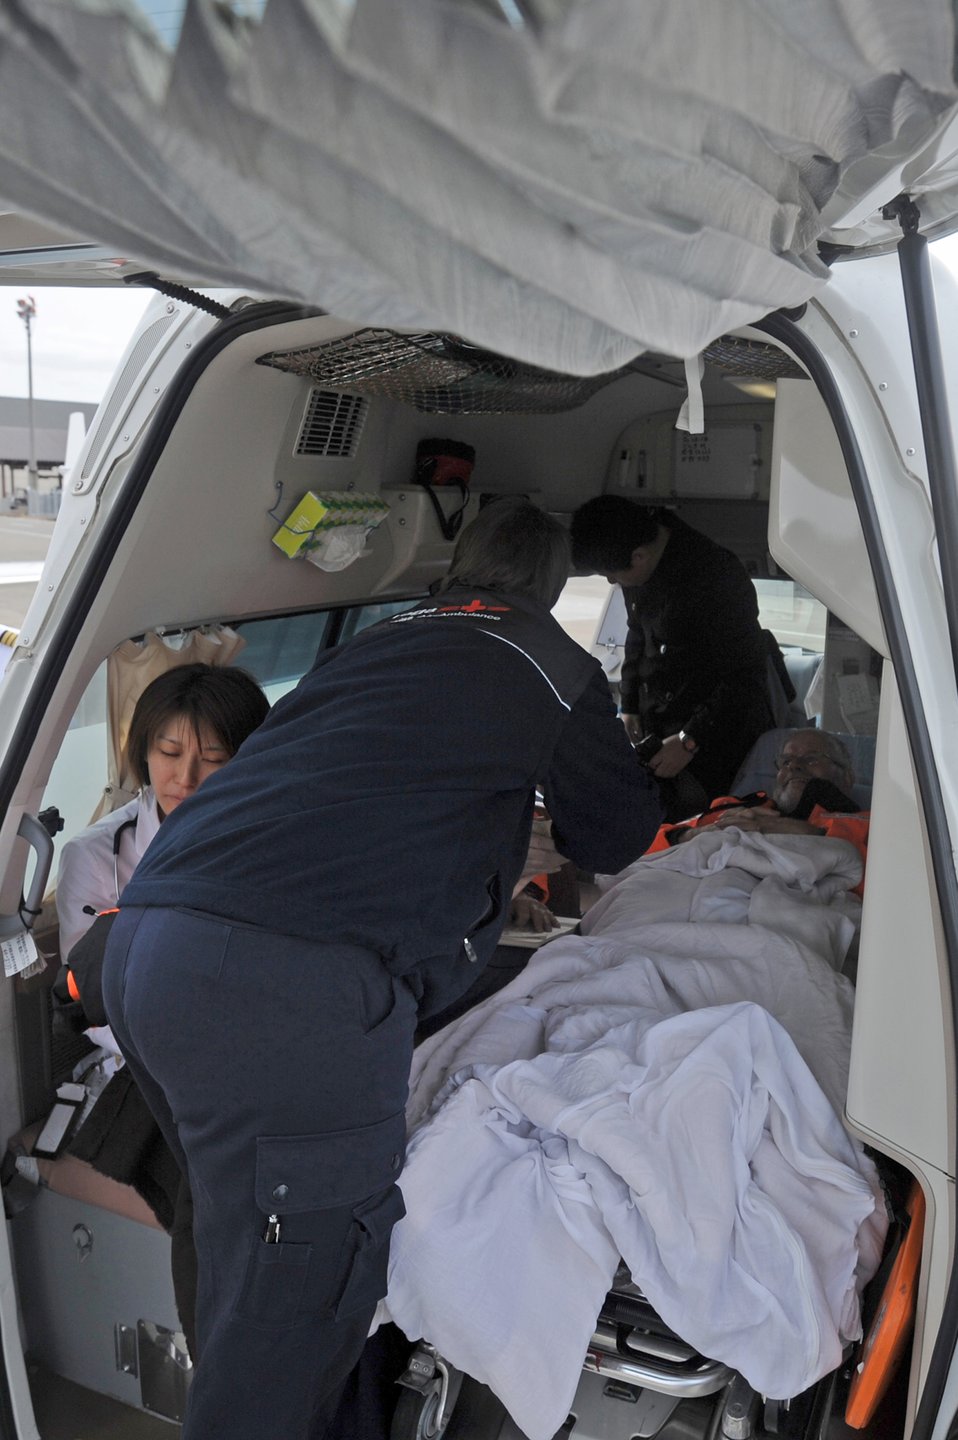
Transporting precious cargo worldwide

MISAWA AIR BASE, Japan -- Nurses from Switzerland's Air-Ambulance assists with the transfer of Maurer Bruno from the vehicle to the plane after his emergency surgery at the Hachinohe Medical Center. Bruno was helping out for ten days with the recovery efforts in northern Japan prior to his emergency surgery at the Hachinohe Medical Center.